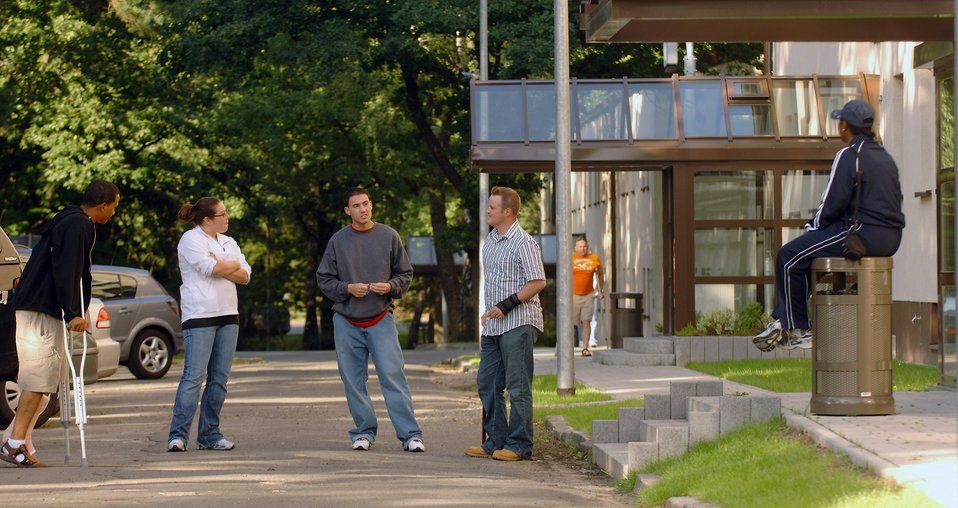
Volunteer organization lifts spirits of wounded veterans